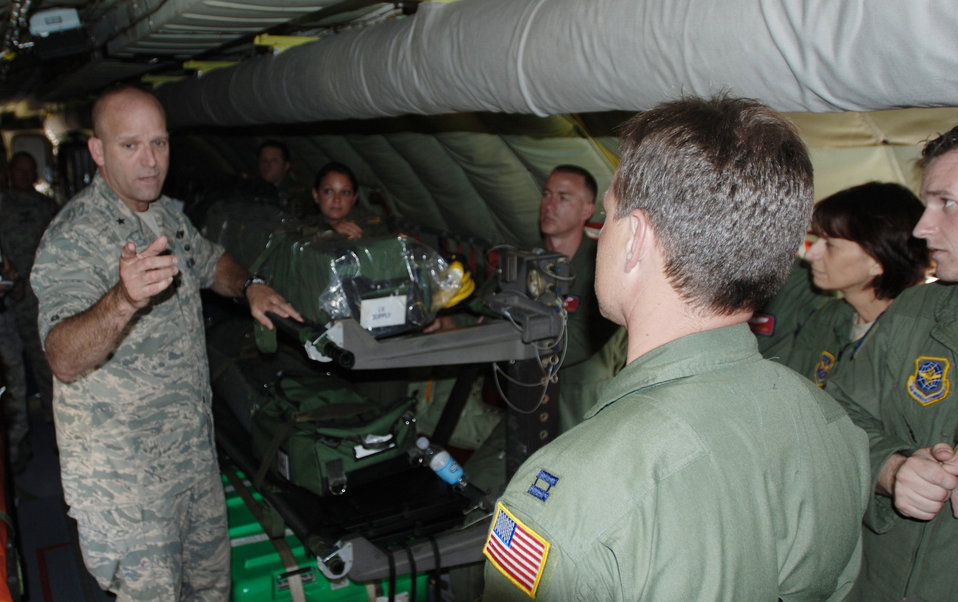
KC-135 could carry more critical patients

Brig. Gen. Douglas Robb speaks to members of the 375th Aeromedical Evacuation Squadron after an aeromedical exercise in a modified KC-135 Stratotanker June 18 at Scott Air Force Base, Ill. General Robb is the Air Mobility Command command surgeon.